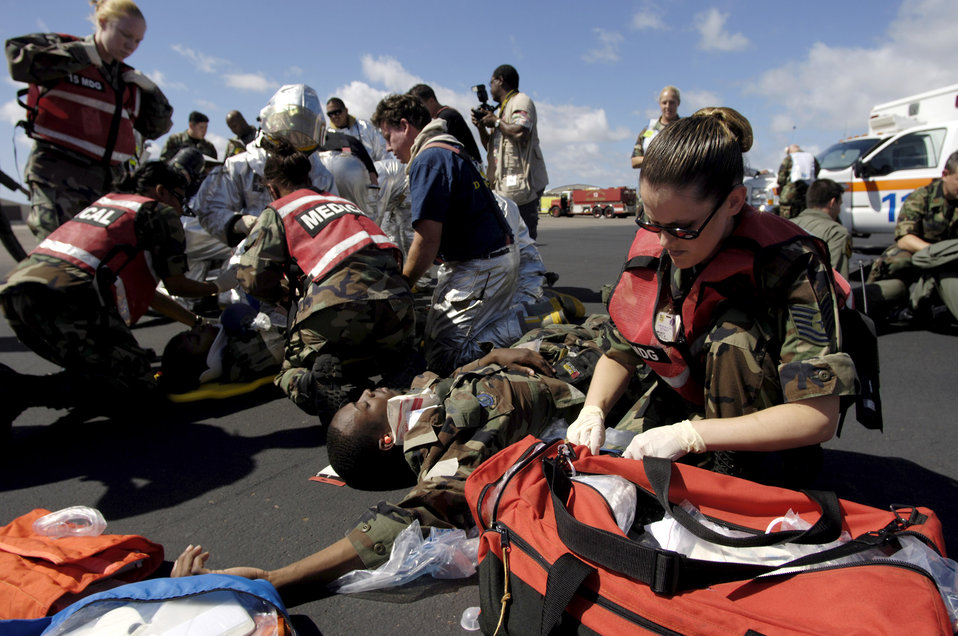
Realistic training

HICKAM AIR FORCE BASE, Hawaii -- Airmen from the 15th Airlift Wing fire department and medical group treat simulated wounded patients during an initial response readiness exercise here. The exercise, held Oct. 17, marks the first time the base used an actual C-130 Hercules and aircrew to increase the training's realism. The wing's search and rescue team also took part, entering the aircraft -- from the Hawaii Air National Guard's 154th Wing -- to retrieve and process